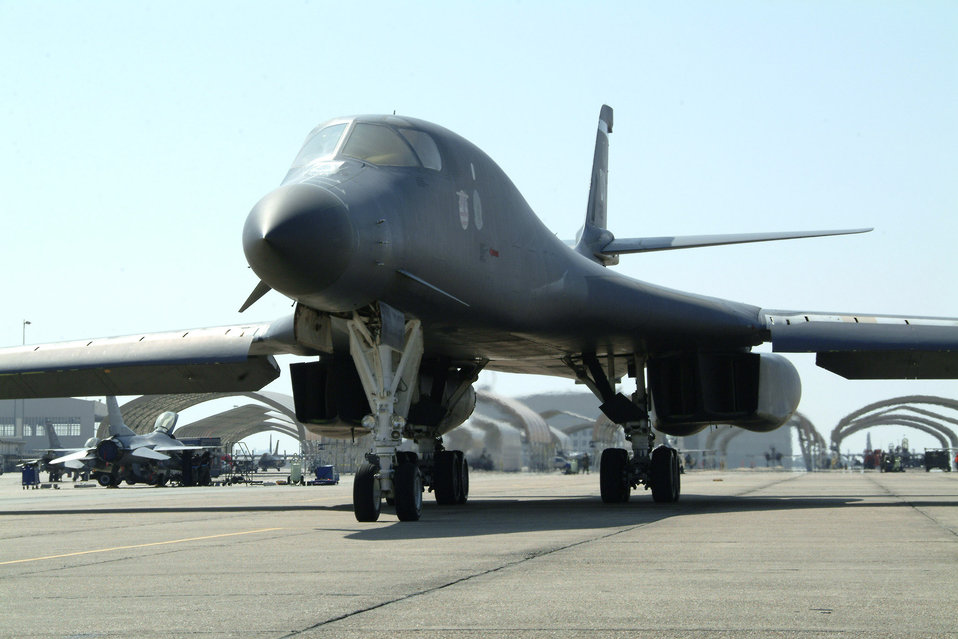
Check your 'six'

A B-1B Lancer prepares to take off Feb. 25 from Eglin Air Force Base, Fla. The bomber from the 337th Test and Evaluation Squadron from Dyess AFB, Texas, was at Eglin AFB for a B-1B tail warning function test to analyze if a radar that faces the rear of B-1B detects incoming missiles or aircraft. If detected, the system can deploy defensive countermeasures.